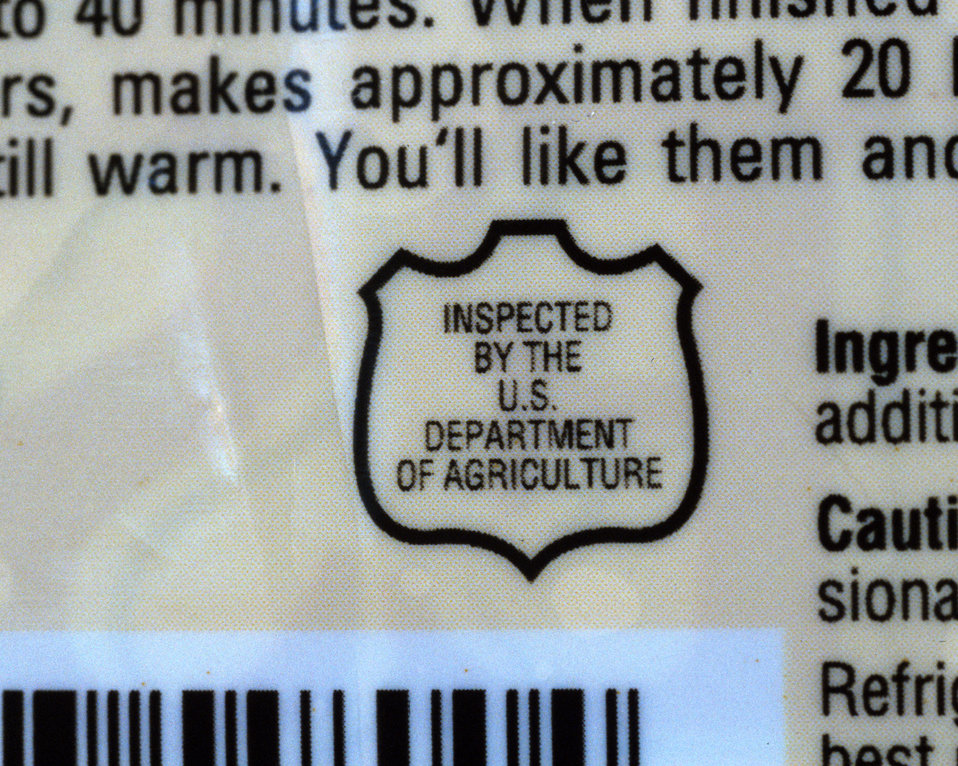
The U.S. Department of Agriculture (USDA) Agricultural Marketing Service (AMS) Processed Products Division offers a variety of resources that may be used to establish the quality of processed fruit, vegetables, and other related products. These resources broadly consist of the documents listed below. Voluntary U.S. grade standards are issued under the authority of the Agricultural Marketing Act of 1946, which provides for the development of official U.S. grades to designate different levels of quality. These grade standards are available for use by producers, suppliers, buyers, and consumers. As in the case of other standards for grades of processed fruits and vegetables, these standards are designed to facilitate orderly marketing by providing a convenient basis for buying and selling, for establishing quality control programs, and for determining loan values.